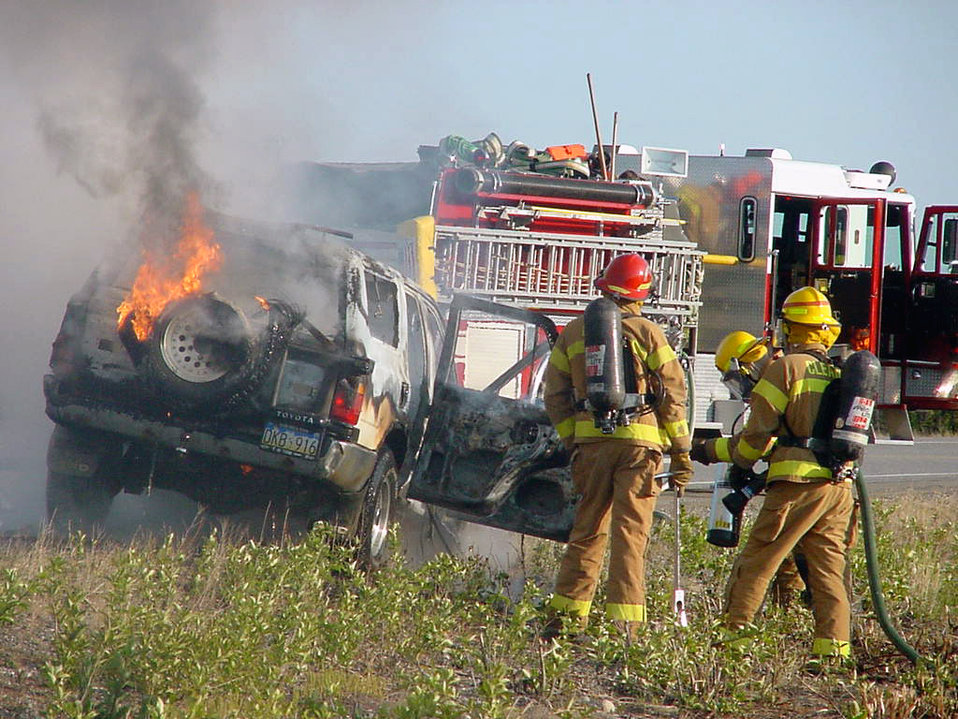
Last frontier fire

CLEAR AIR FORCE STATION, Alaska -- Members of the fire department from the 13th Space Warning Squadron respond to a vehicle fire south of base on the Parks Highway. The firefighters extinguished the blaze, but the vehicle was a complete loss.